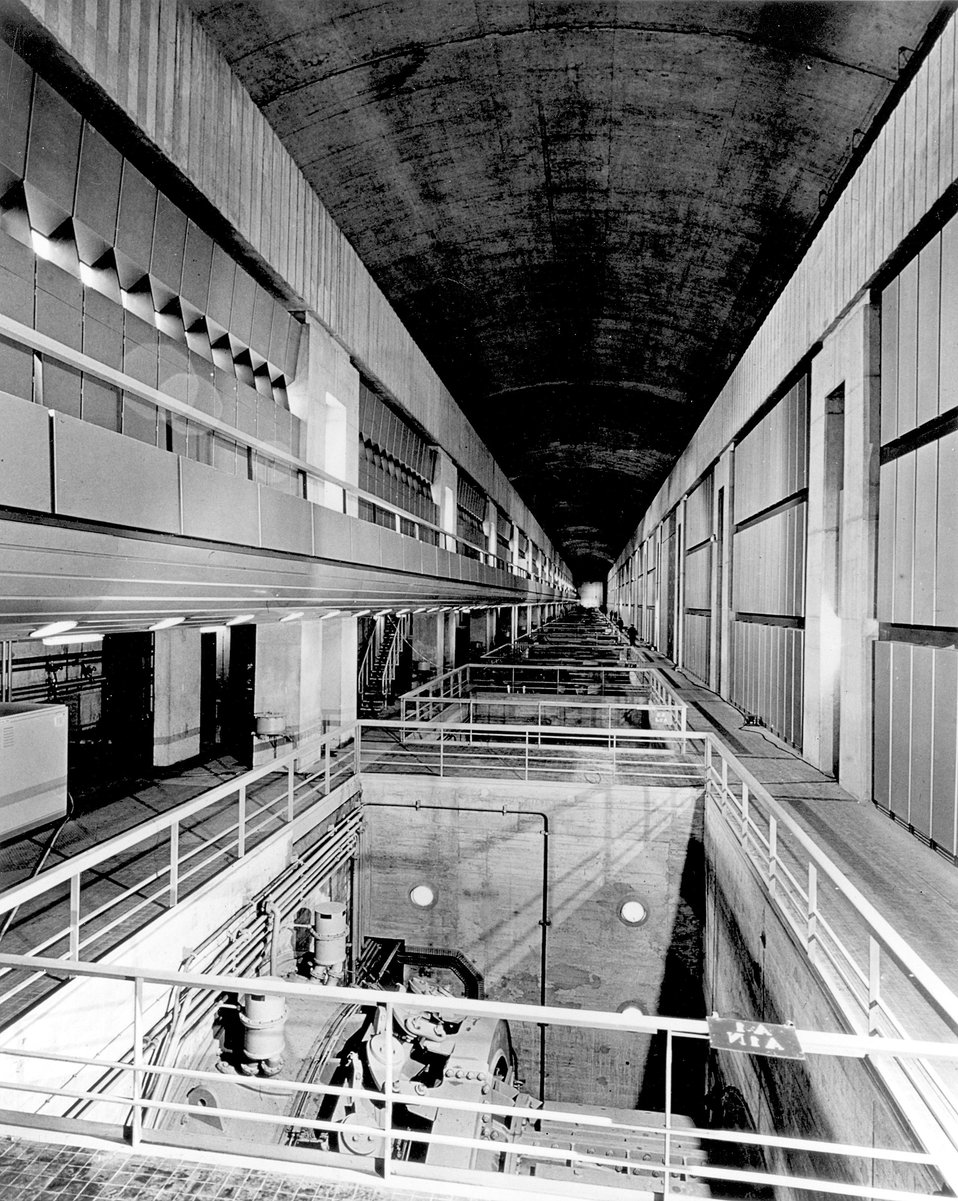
The tide which rushes up the Rance estuary on the northern coast of Brittany is one of the highest in the wold, reaching 13 and a half meters. c. 1978